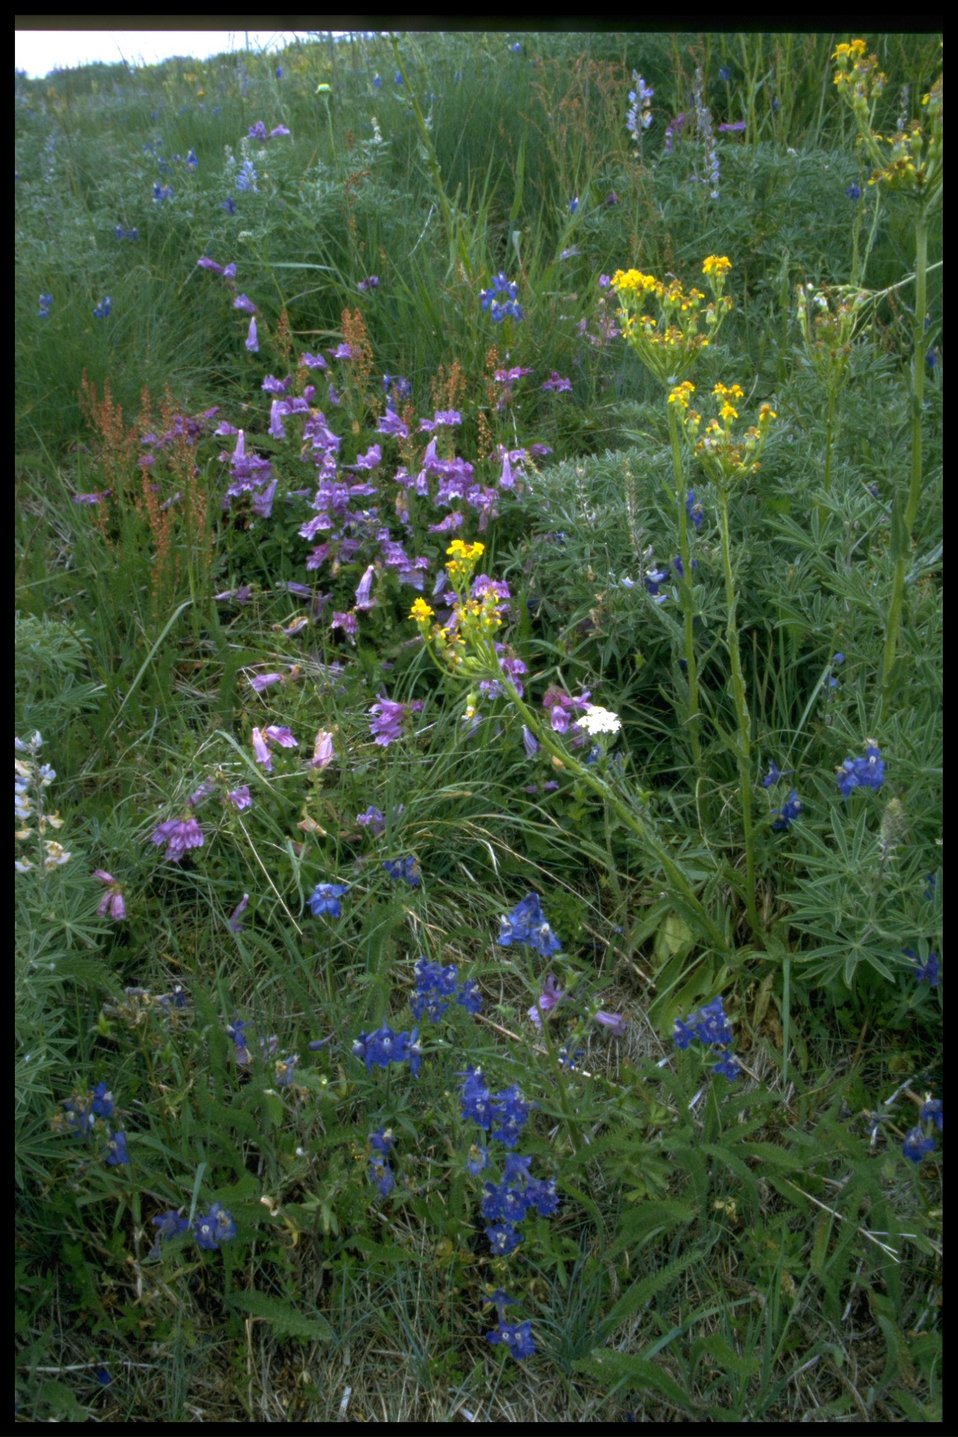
Medium shot of wildflowers (genus Lupinus, Penstemon, Senecio).